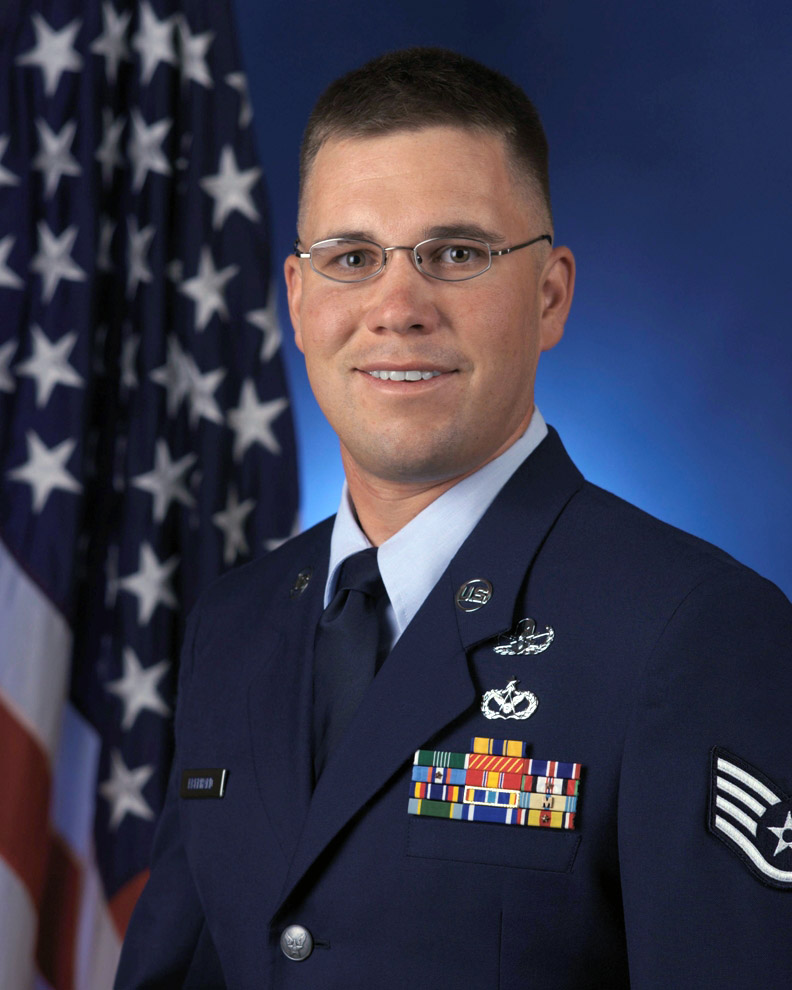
Air Force officials honor 12 Outstanding Airmen of the Year

Staff Sgt. Eric Eberhard of Hill Air Force Base, Utah, is one of the 12 Outstanding Airmen for 2008.